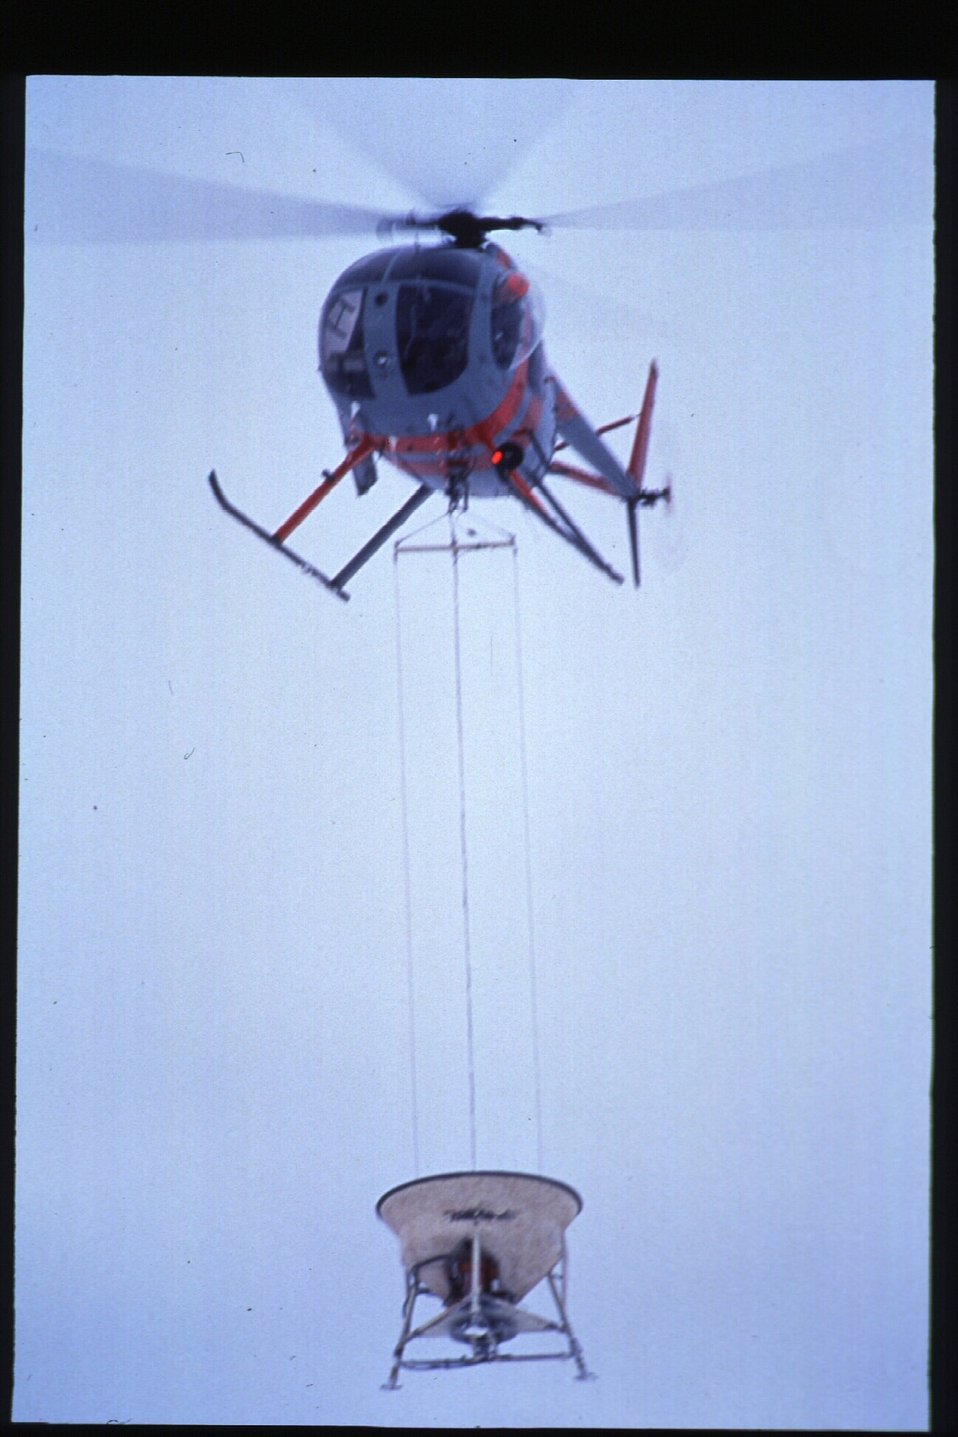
Boise Foothills Fire Danskin Mountains and South Fork of Boise River Helicopter bucket drop Four River Field Office LSRD Lower Snake River District